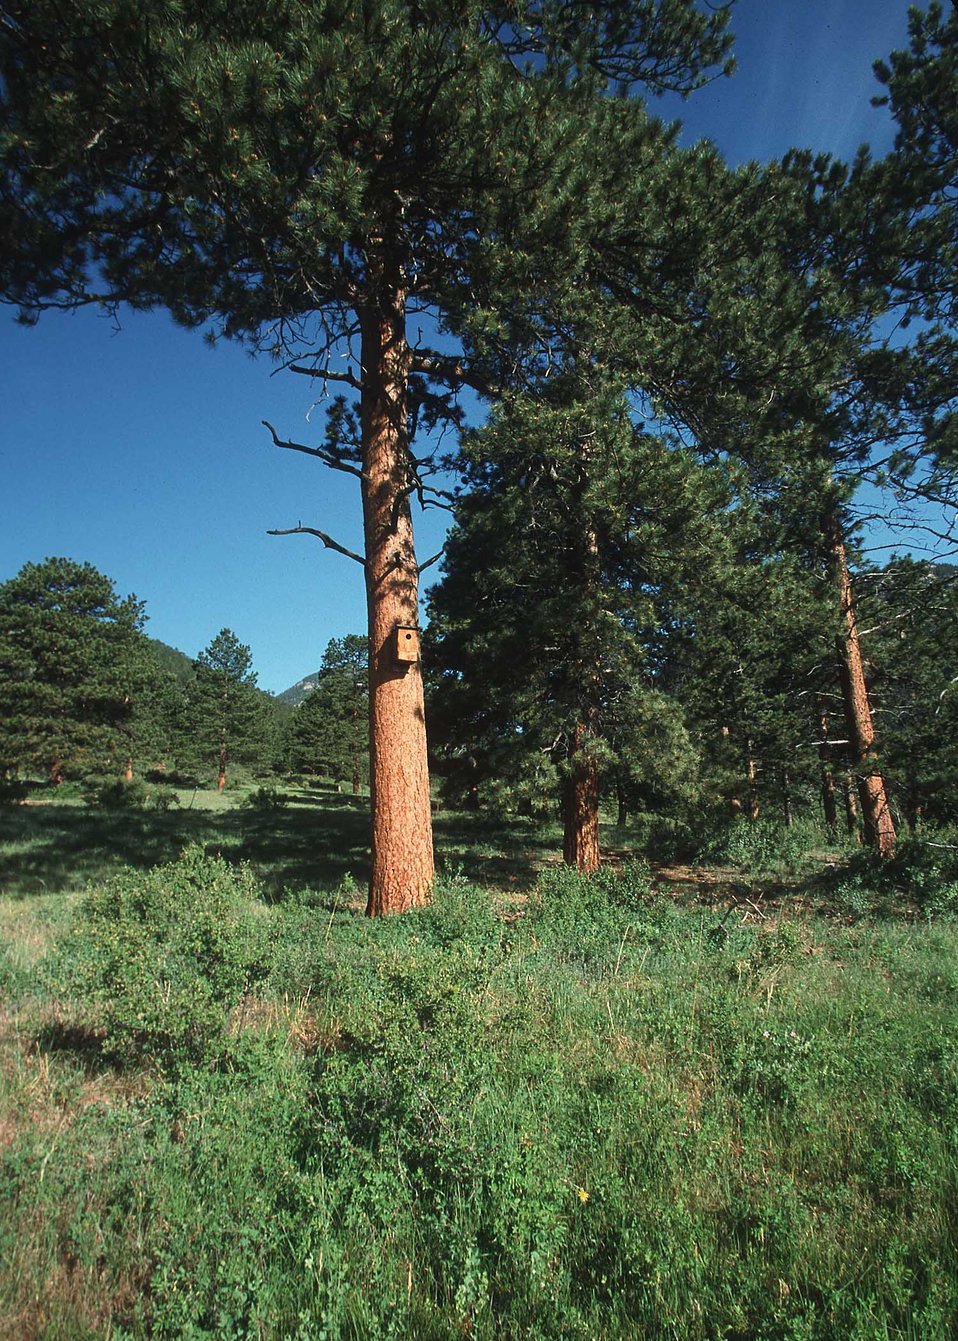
Mountain Bluebird nest box, McGregor Ranch.